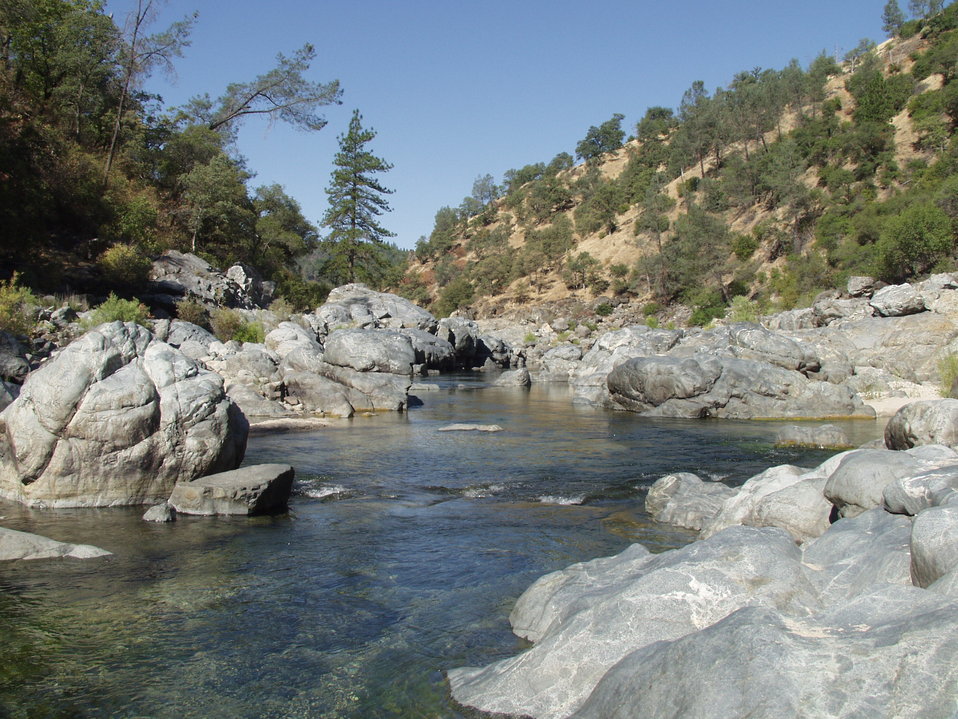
Yuba River

From the scenic Sierra foothills east of Marysville, Calif. the Yuba River flows west to Englebright Lake dam, shown here August 10, 2001. Formed by Englebright Dam the lake is 9 miles long with a surface area of 815 acres, an elevation of 527 feet and 24 miles of shoreline. Completed by the U.S. Army Corps of Engineers Sacramento District in 1941, the dam was authorized by Congress for the storage of hydraulic gold mining debris on the Yuba River. The concrete arch dam spans 1,142 feet across and is 260 feet high. The lake and dam are managed by the Sacramento District.